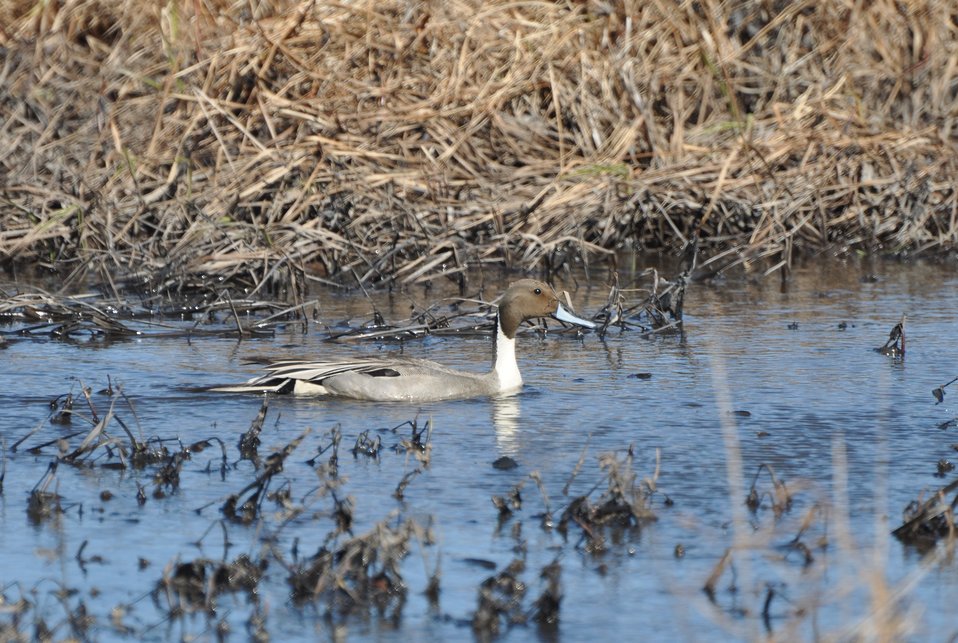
Northern pintail male

Andreafsky wilderness, Yukon Delta National Wildlife Refuge